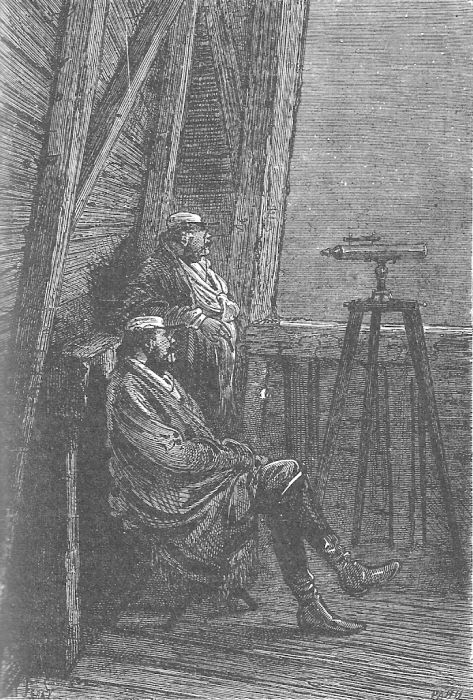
An illustration from Jules Verne's novel 'The Adventures of Three Englishmen and Three Russians in South Africa' (1870) drawn by Jules Férat. Polski: Ilustracja powieści Juliusza Verne'a 'Przygody trzech Rosjan i trzech Anglików w południowej Afryce' (1870) autorstwa Julesa Férata. Français : Jules Verne: 'Aventures de trois russes et de trois anglais dans l’Afrique australe' (1870), dessins par Jules Férat.